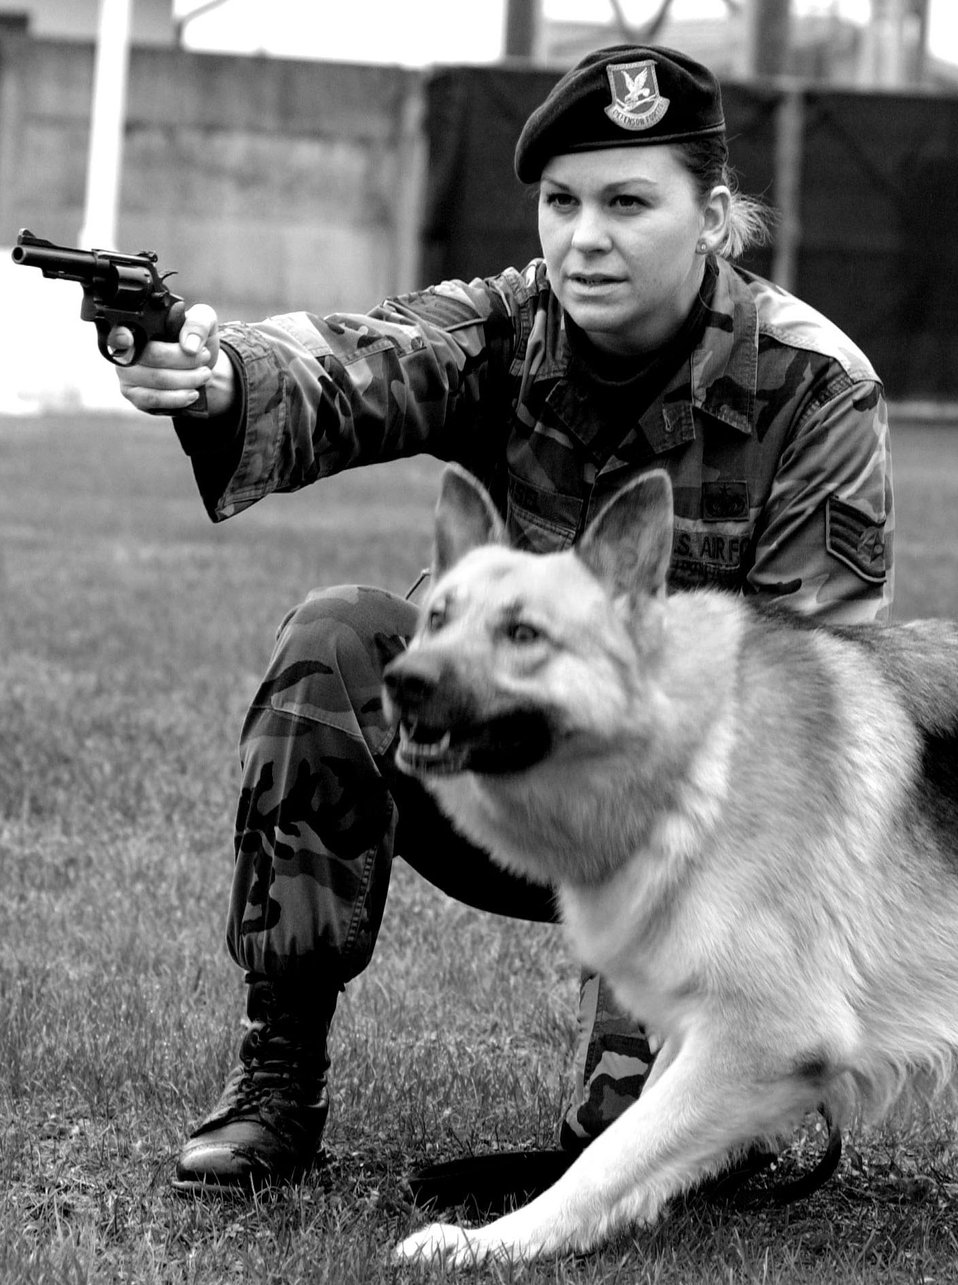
Weapons training

AVIANO AIR BASE, Italy -- Staff Sergeant Carinae Samsel fires a .38 Caliber revolver during Weapon Recognition Training with her partner